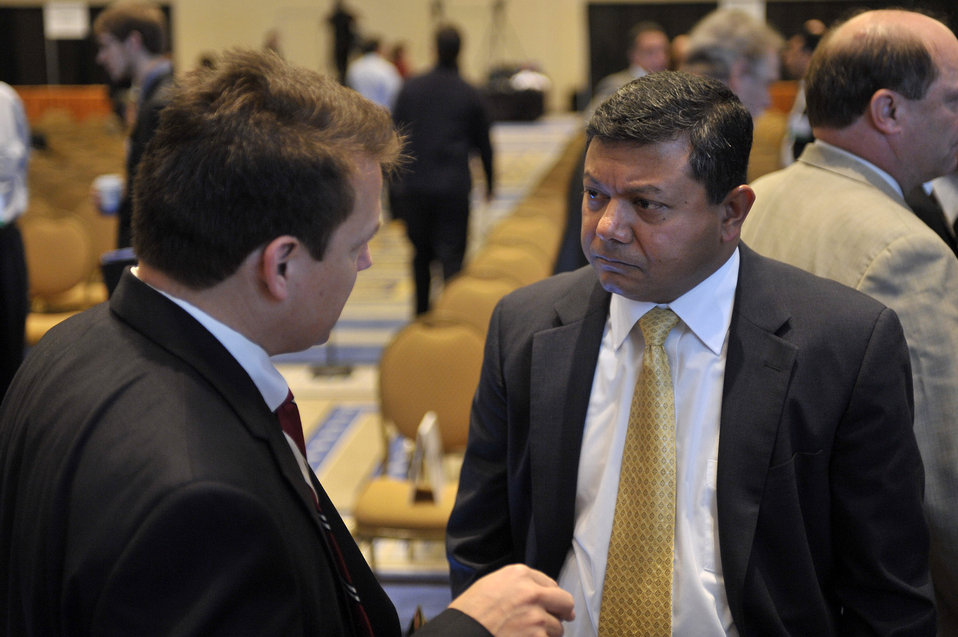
ARPA-E Energy Innovation Summit 2011, 68 of 83

Dr. Arun Majumdar, Director, ARPA-E.